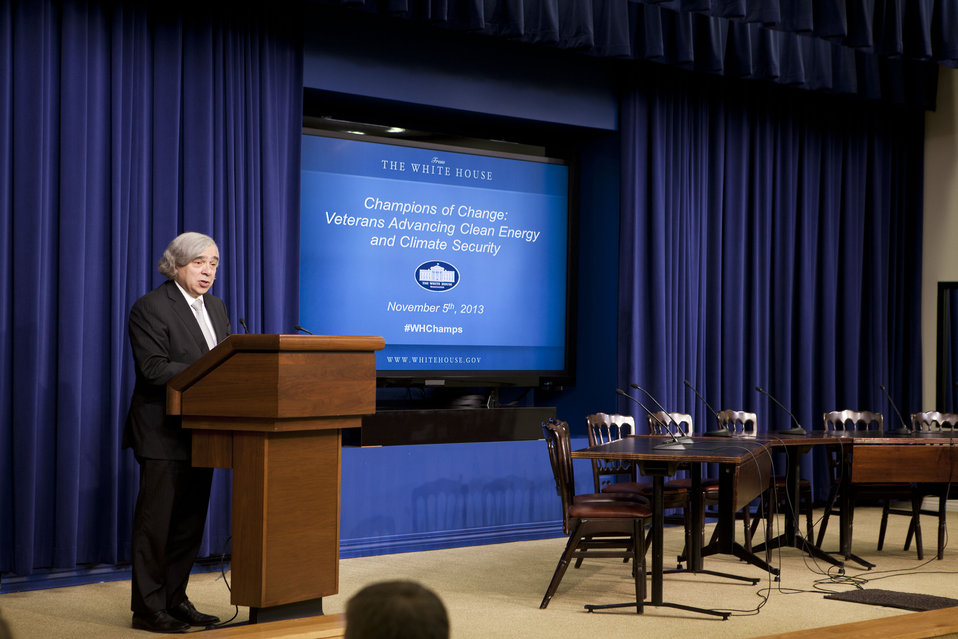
Secretary Moniz delivers remarks at the Champions of Change event.